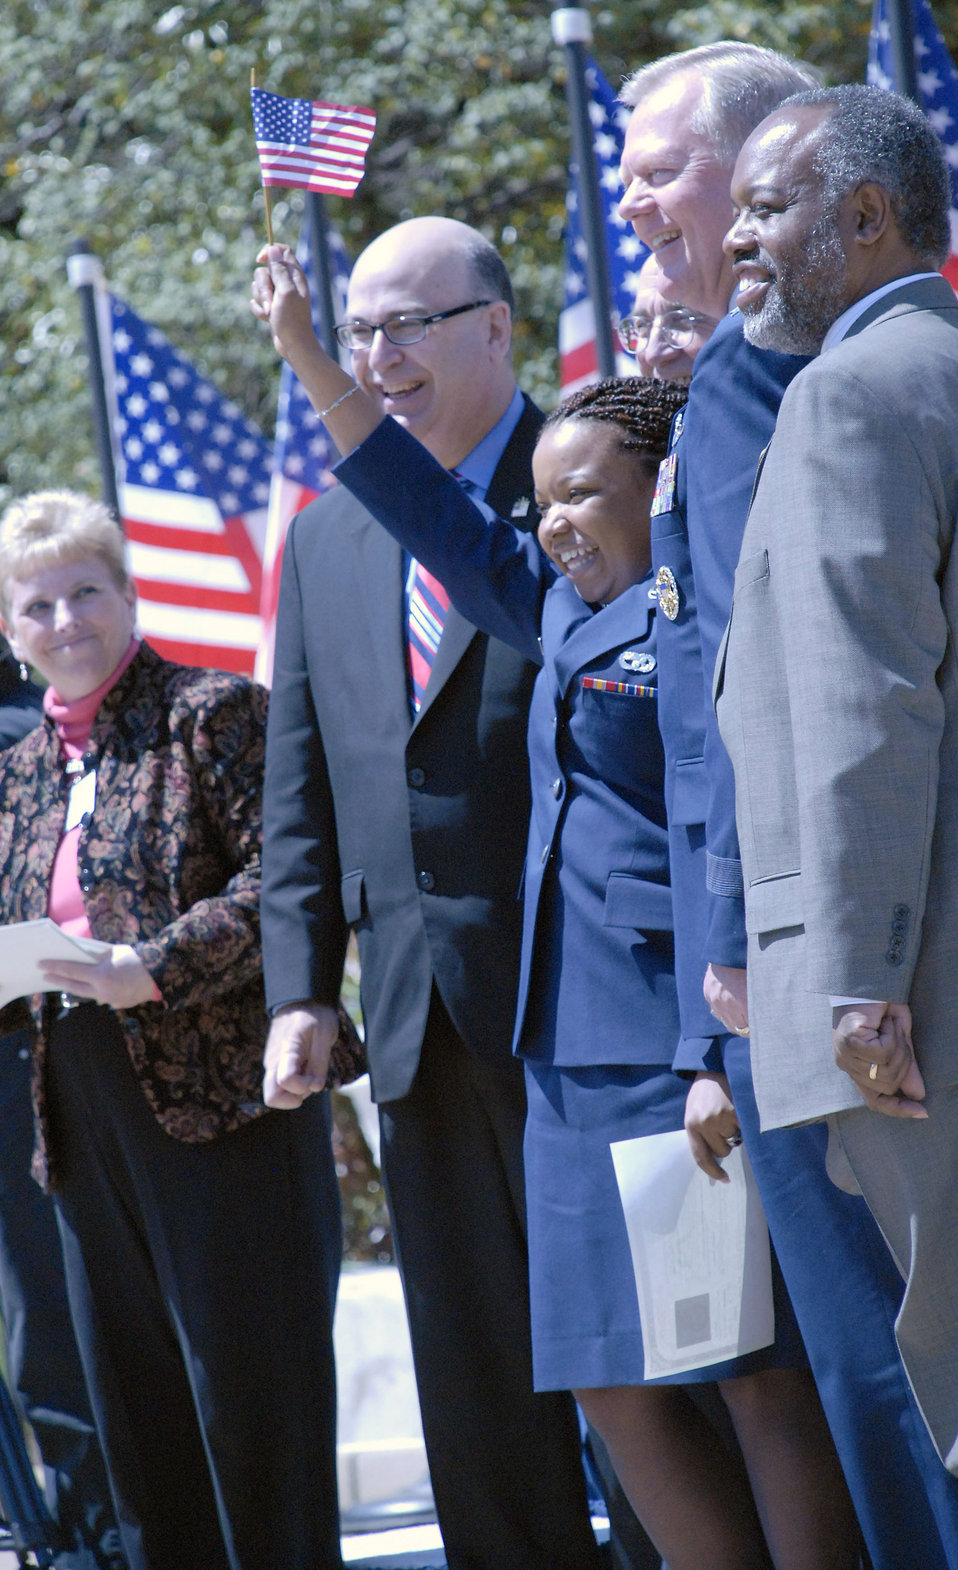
Airman becomes citizen in Pentagon ceremony

Senior Airman Cassandra Brandon raises the American flag after accepting her naturalization certificate during a naturalization ceremony April 14 in the Pentagon's center courtyard. More than 20 servicemembers became American citizens during the ceremony. Airman Brandon, who was born and raised in Guyana, moved to the United States with her father in 1991 and joined the Air Force Reserve in 2002.